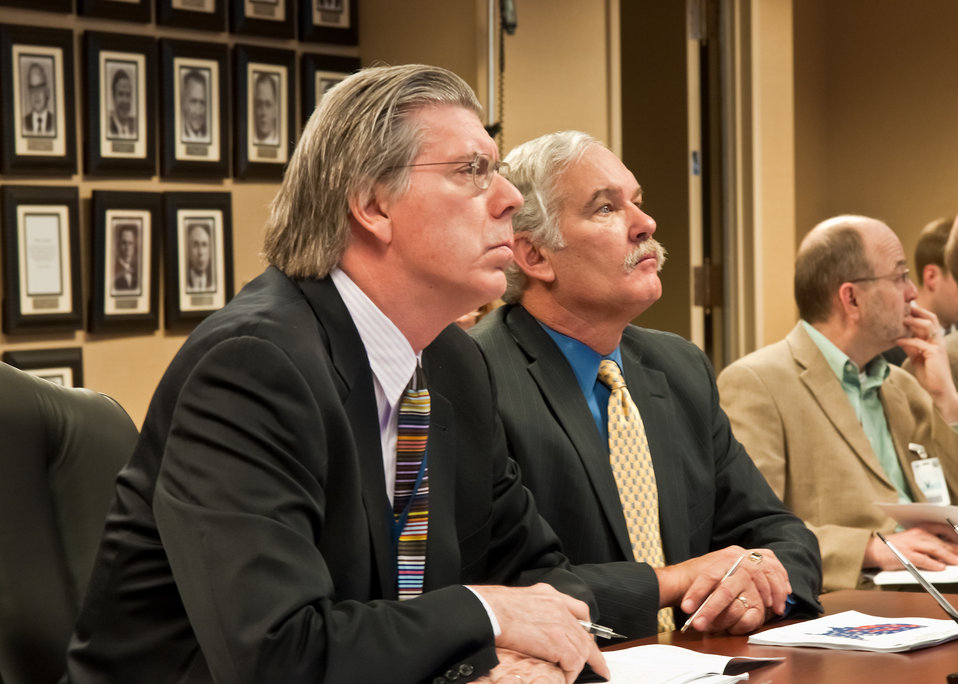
Dr. Joseph Glauber (left), Chief Economist for the U.S. Department of Agriculture and Michael Scuse (right), Undersecretary, Farm and Foreign Agricultural Services watch a power point presentation explaining the United States Department of Agriculture’s, National Agricultural Statistics Service, March Agricultural Survey. Undersecretary Scuse signed as the Secretary of Agriculture’s designee releasing the information at the USDA, NASS Lockup in Washington, DC, Thursday, March 31, 2011. The NASS lockup is agricultural commodity information held until the Secretary of Agricultural or Secretary’s Designee has signed and released the information. The signing is the official act of recognizing the information as an official USDA document.